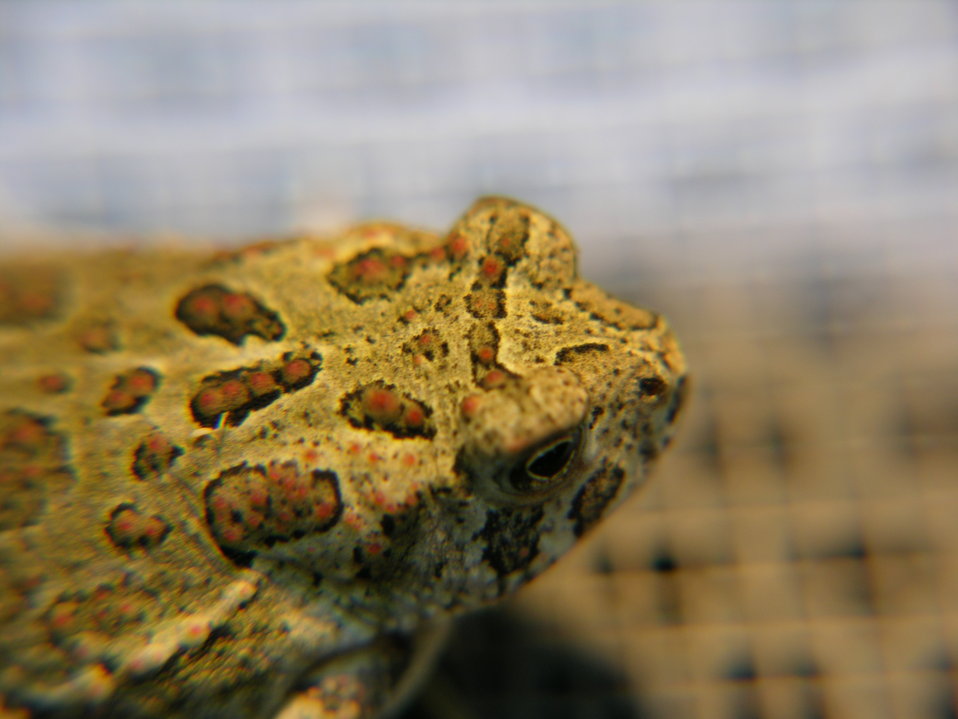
Wyoming Toad

In the 1070’s (Wyoming) hearing the buzzing trill of the Wyoming Toad was equivalent to hearing crickets in Kansas.